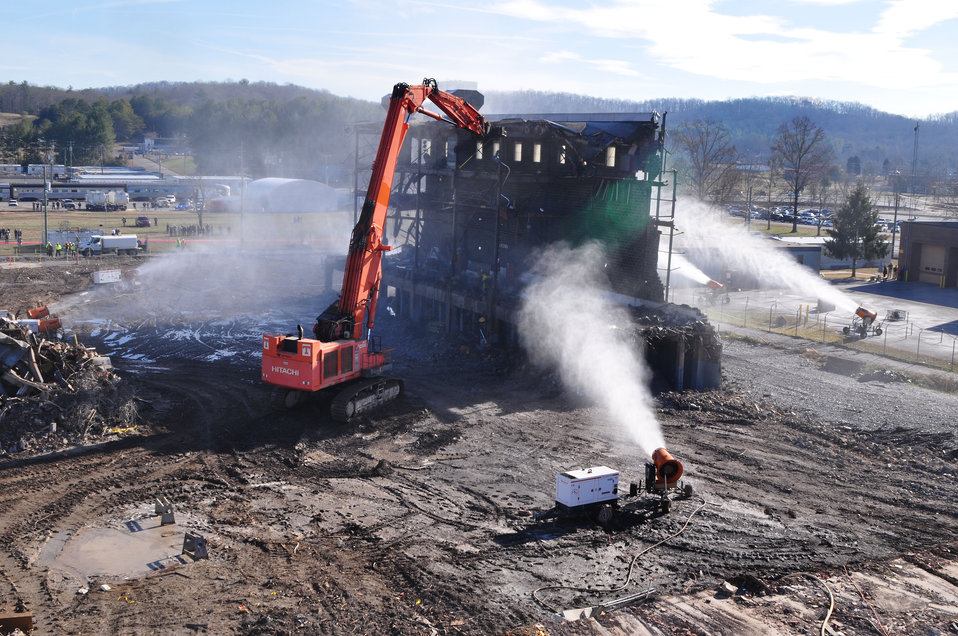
Last Part of K-25 Coming Down Oak Ridge 2013

13-157-1 DOE photo Lynn Freeny 12-19-2013 Oak Ridge Tennessee